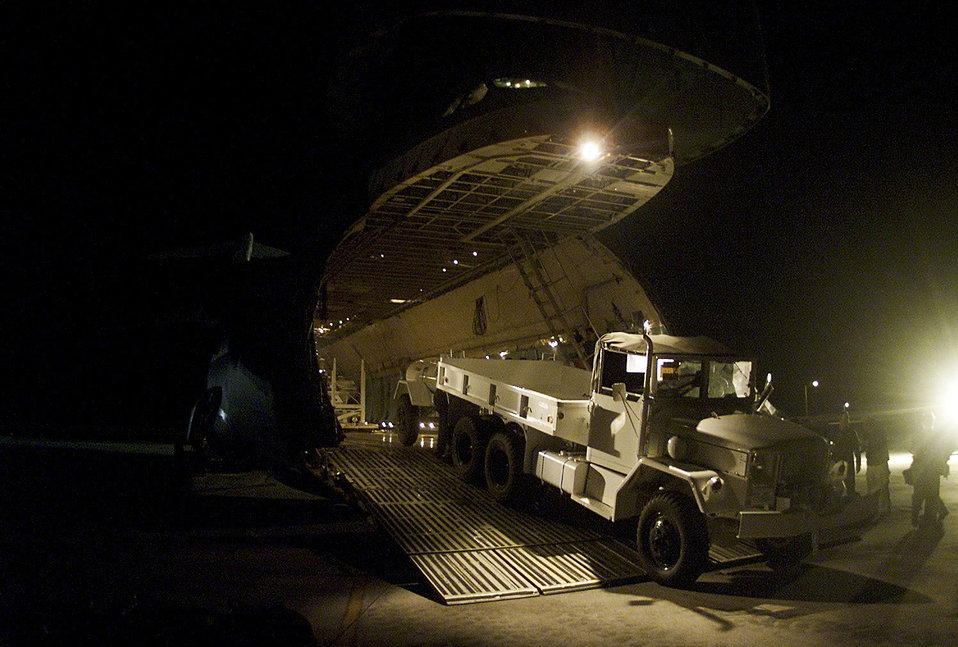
Earthquake relief

FILE PHOTO -- A 2.5 ton truck bound for Indian earthquake relief is unloaded from a C-5 Galaxy for delivery to Ahmedabad, India, February 2, 2001. Delivery of tents, blankets and sleeping bags wtih the heavy equipment will be delivered to the international airport at Ahmedabad, India.